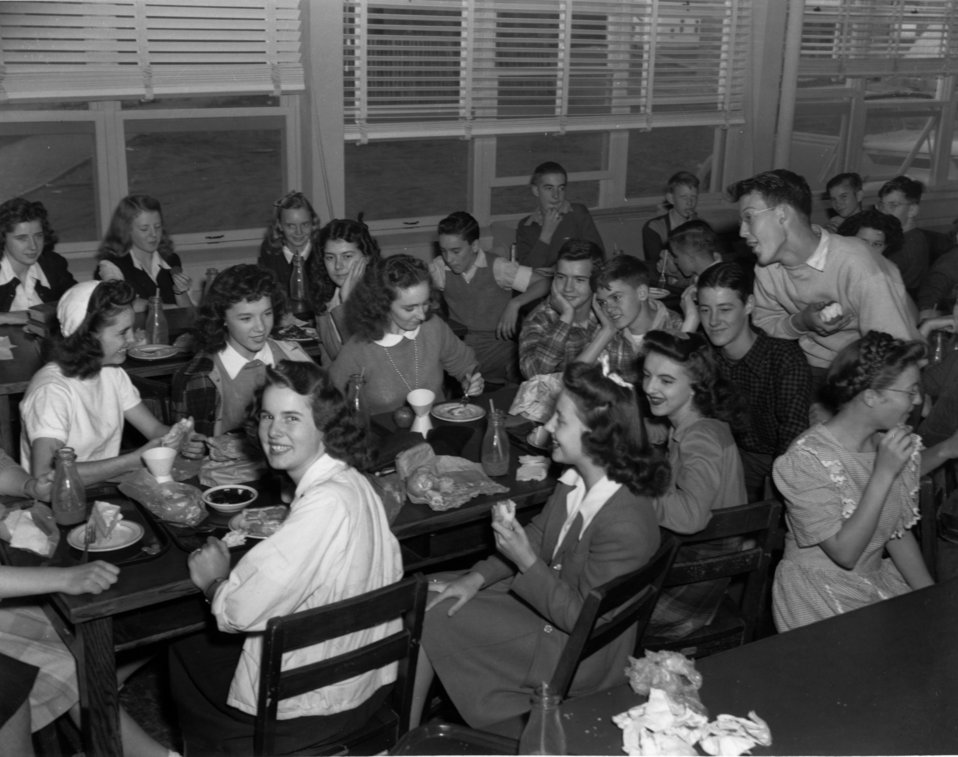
Schools at Oak Ridge